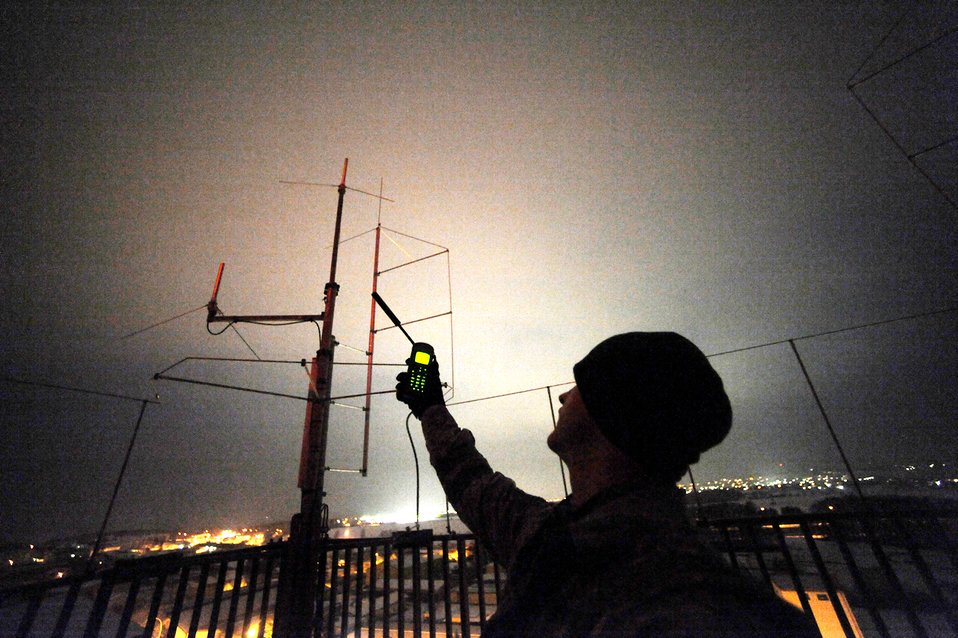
Clear skies, clear reception

Staff Sgt. Ronald Booth, with the 435th Security Forces Squadron at Ramstein Air Base, Germany, sends information regarding an insertion mission at nearby Bitburg Airport Jan. 25, 2010, in preparation for Ramstein's operational readiness inspection in September.